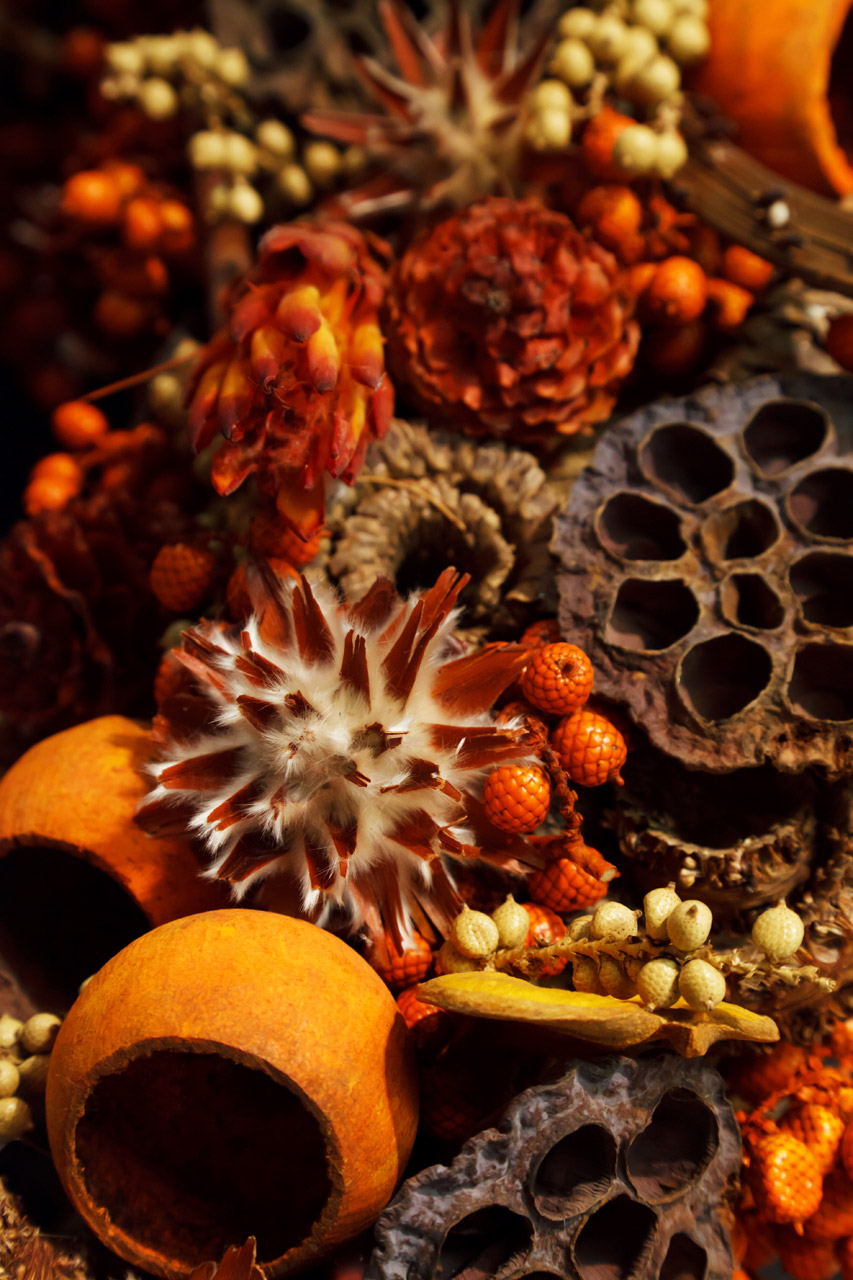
Potpourri decoration background.